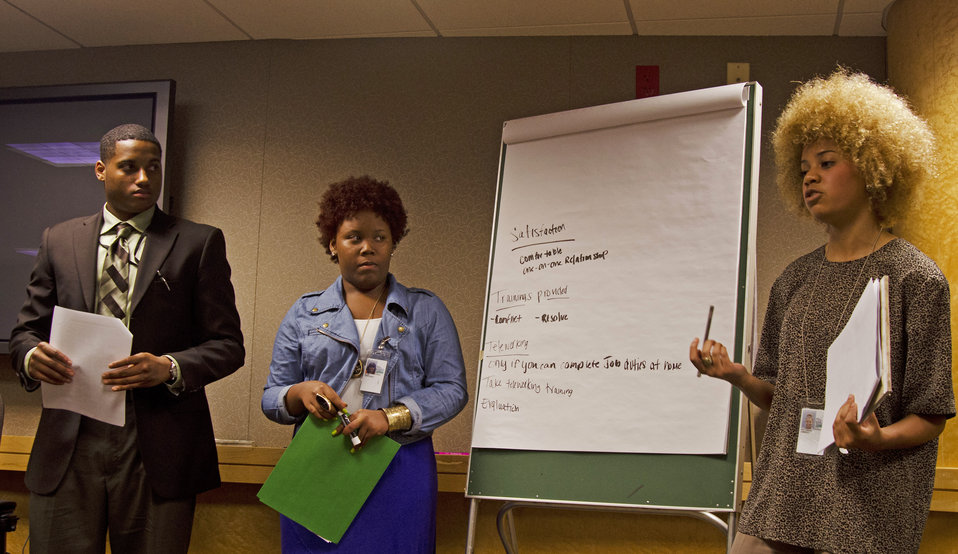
(L to R) U.S. Department of Agriculture (USDA) Departmental Management (DM) intern Peter Calhoun, USDA National Institute of Food and Agriculture (NIFA) intern Montia Medley and USDA DM intern Amber Mathews make their group presentation at the USDA Internship Program Listening Session in USDA’s South Building in Washington, D.C. on Monday, August 7, 2012. The purpose of the USDA Internship Program Listening Session is to provide interns with a forum to express their views about their experiences as a USDA intern. These young people will be among the most promising future USDA leaders and participate in an individual discussion and group session that will develop leadership skills.